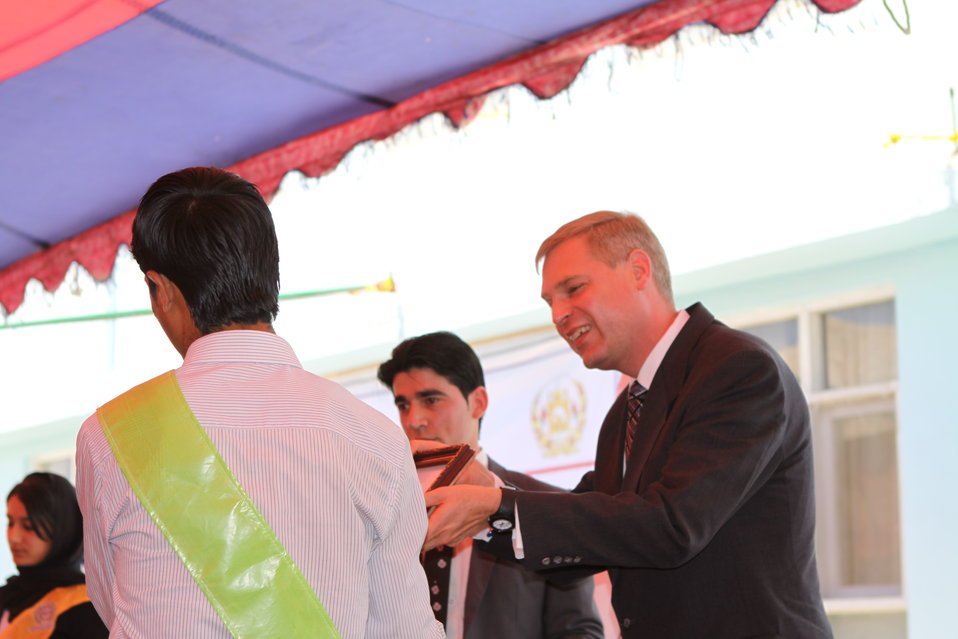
100522 ATVI Graduation 119